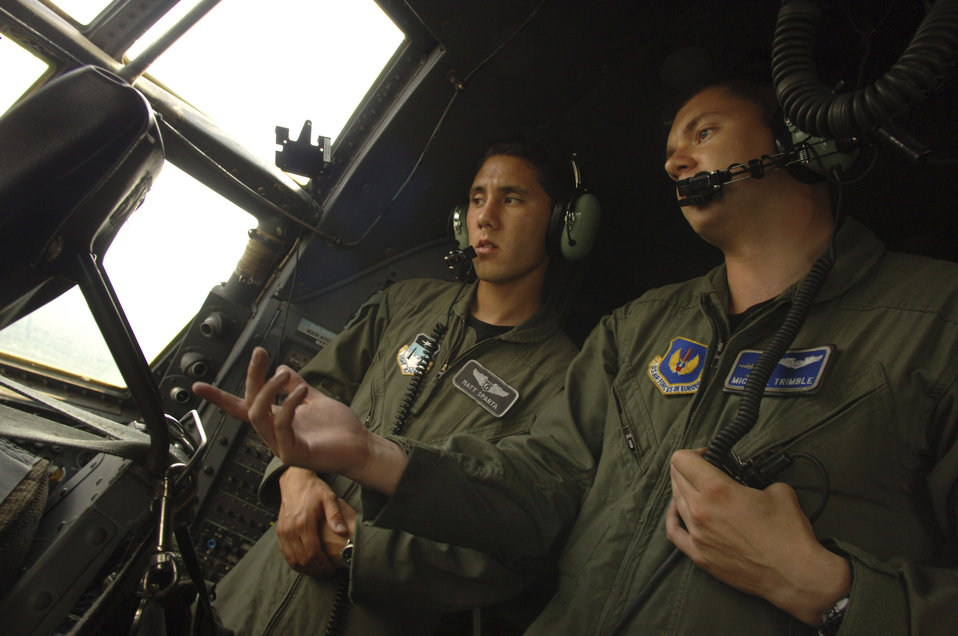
Operation Air Force puts cadets in the air over Europe

C-130 Hercules navigator Capt. Michael Trimble (right) discusses the capabilities of the aircraft with Air Force Academy Cadet 1st Class Matt Sparta during an airdrop sortie over eastern Germany as part of a hands-on, job shadow program called Operation Air Force. Captain Trimble is assigned to the 37th Airlift Squadron at Ramstein Air Base, and Cadet Sparta, along with 80 other cadets, spent three weeks at Ramstein AB observing various squadron operations.